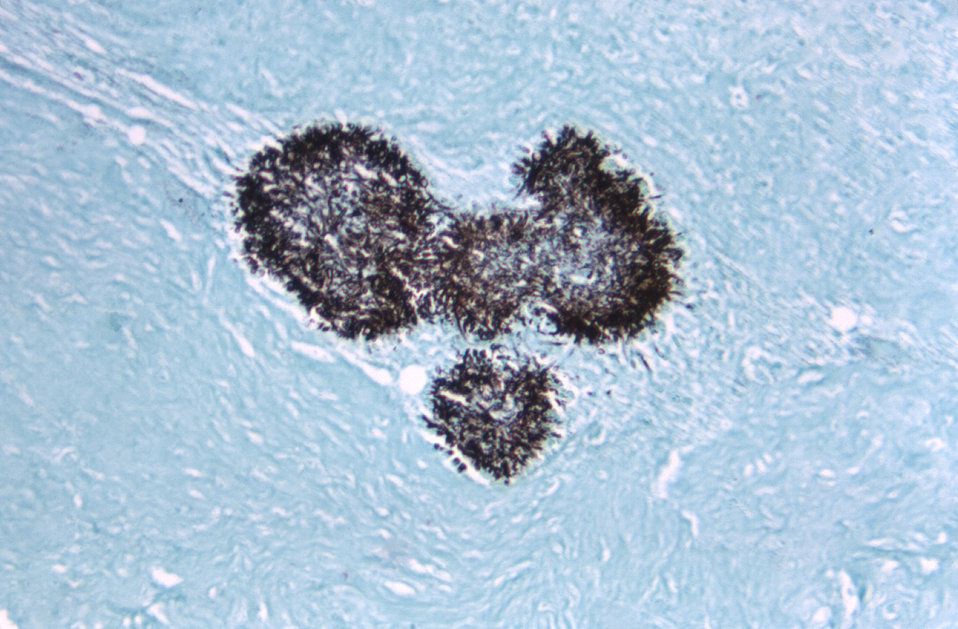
Under a relatively low magnification of 125X, this Gomori-stained photomicrograph revealed some of the ultrastructural morphology displayed by a mycetoma caused by Acremonium sp. fungal organisms.